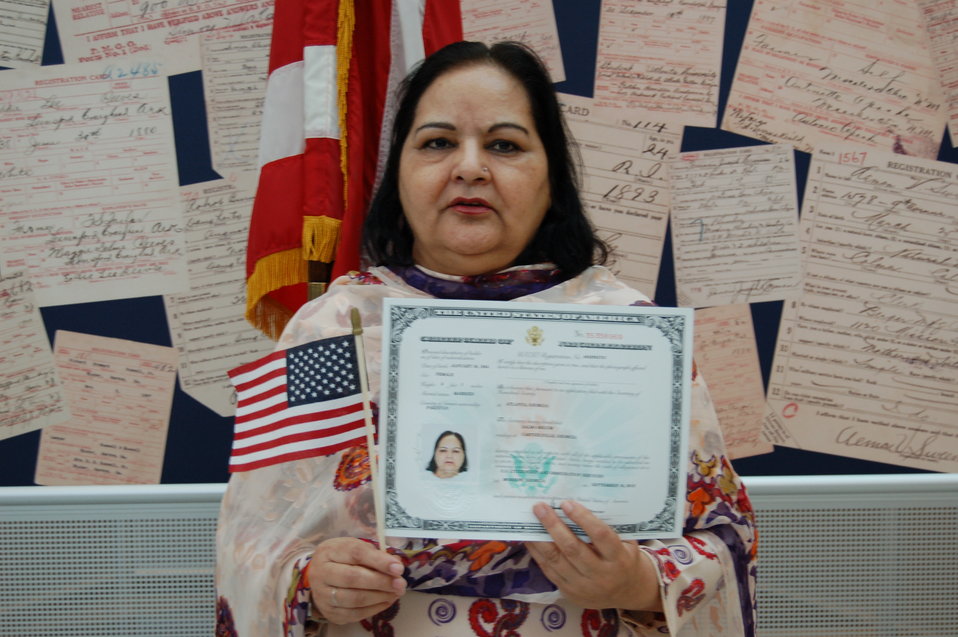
New Citizens